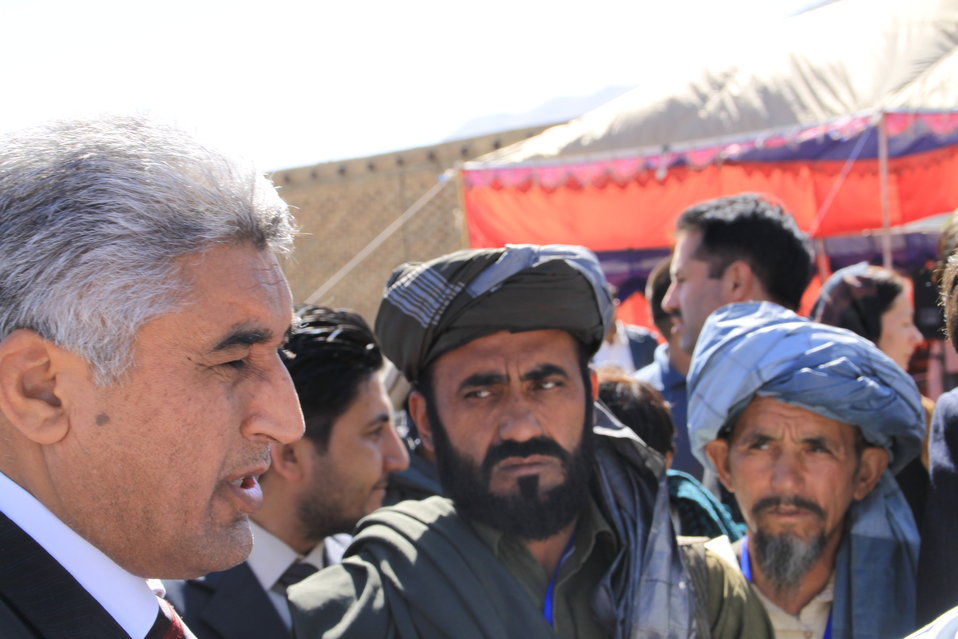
AVIPA Plus Wheat Seed Distribution 101005

US Ambassador Karl Eikenberry and USAID Acting Mission Director Kevin Brownawell joined the Minister of Agriculture, Irrigation and Livestock, H.E. Minister Mohammed Rahimi in signing a Memorandum of Understanding and distributing vouchers to area farmers for wheat and fertilizer.

US Ambassador Karl Eikenberry and USAID Acting Mission Director Kevin Brownawell joined the Minister of Agriculture, Irrigation and Livestock, H.E. Minister Mohammed Rahimi in signing a Memorandum of Understanding and distributing vouchers to area farmers for wheat and fertilizer.